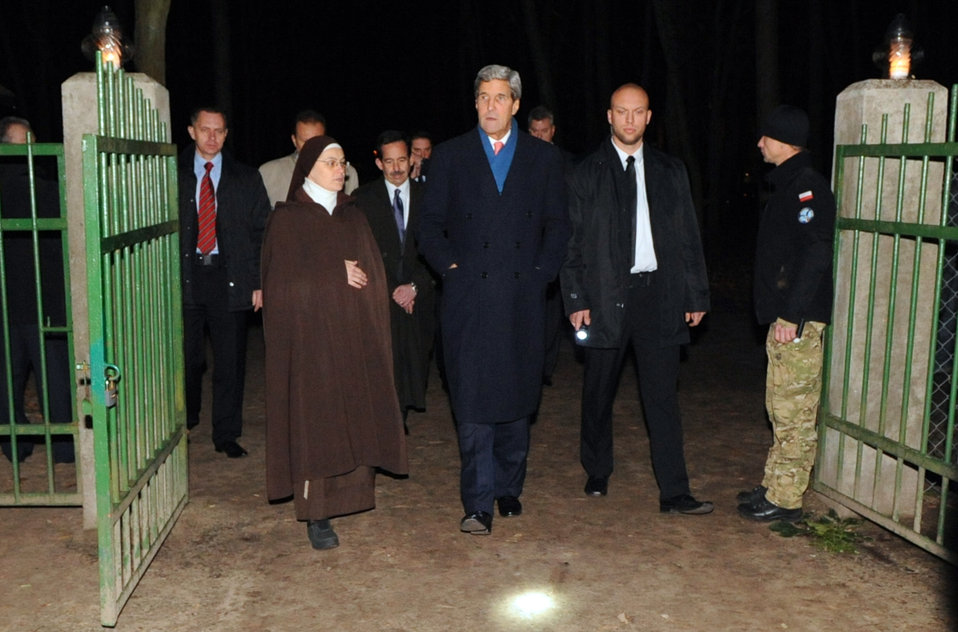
Secretary Kerry Arrives at Laski Cemetery to Pay Respects to Former Polish Prime Minister Mazowiecki

U.S. Secretary of State John Kerry, guided by Sister Gabriela Szlubowska, arrives at Laski Cemetery outside Warsaw, Poland, to pay respects to the late Prime Minister Tadeusz Mazowiecki on November 4, 2013.